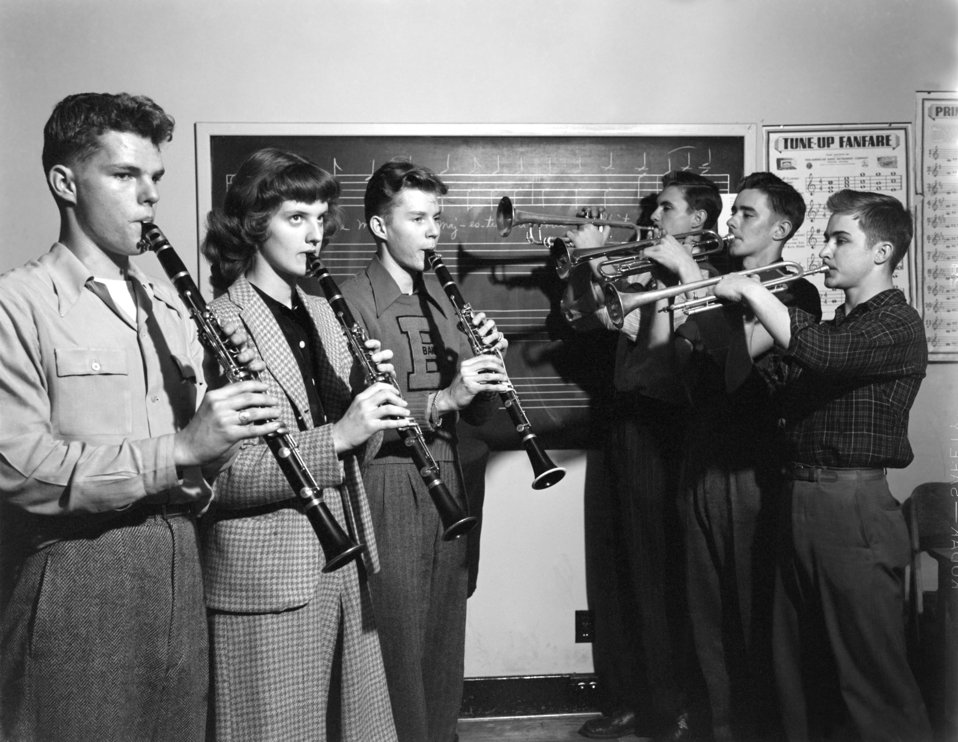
Music Class Oak Ridge High School 1947

3290-4d DOE photo Ed Westcott 2-12-1947 Oak Ridge Tennessee